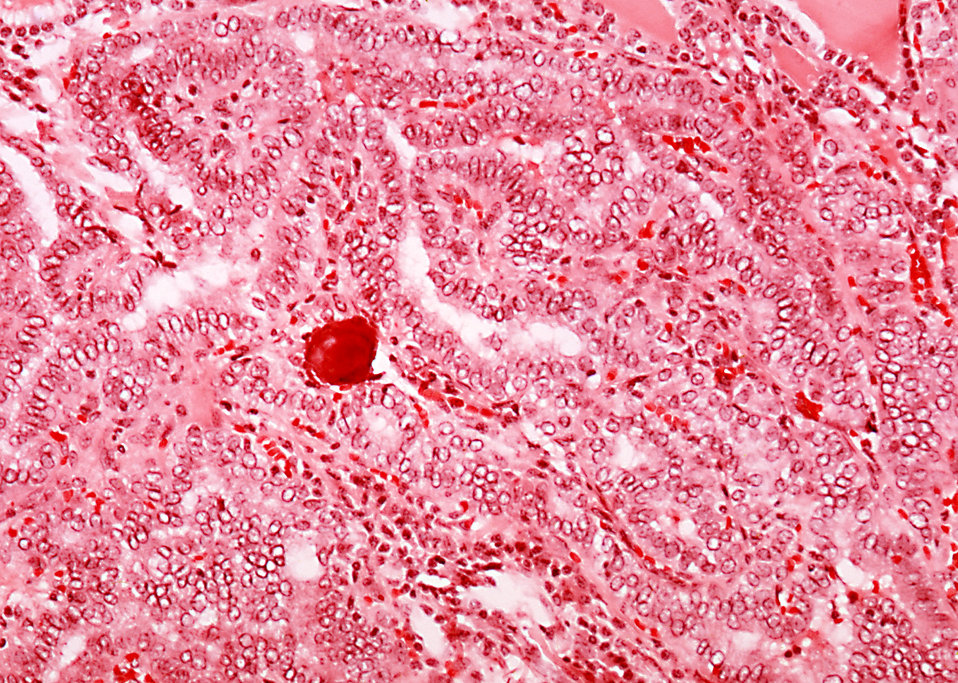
Histopathology of papillary carcinoma, thyroid.